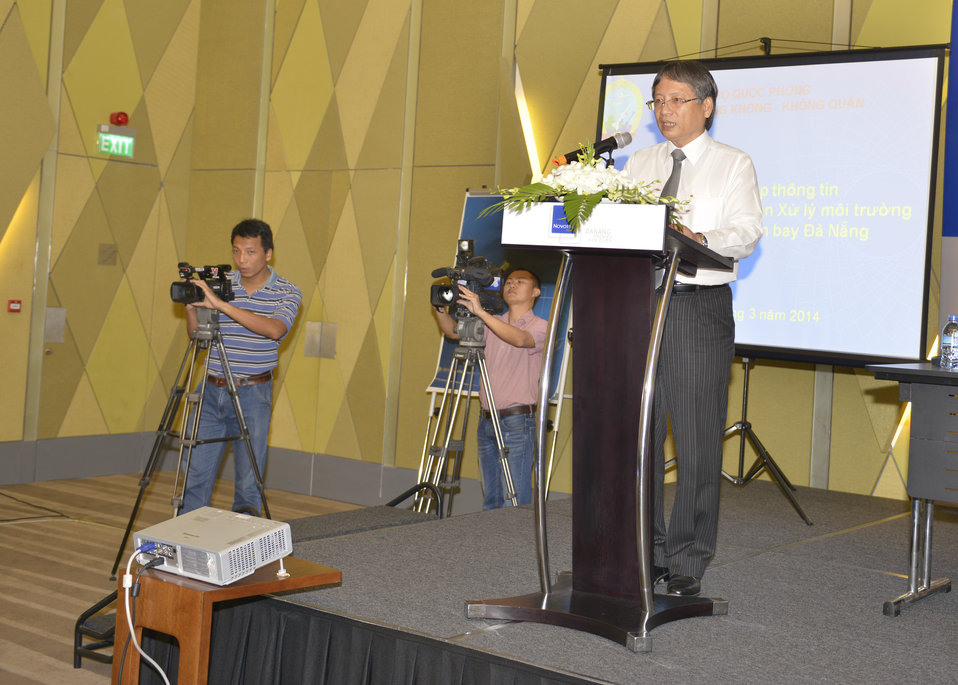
Mr. Nguyen Ngoc Tuan, Danang People’s Committee Vice Chairman, speaks at the Community Outreach Session on Environmental Remediation of Dioxin Contamination at Danang Airport Project

Danang, March 25, 2014.